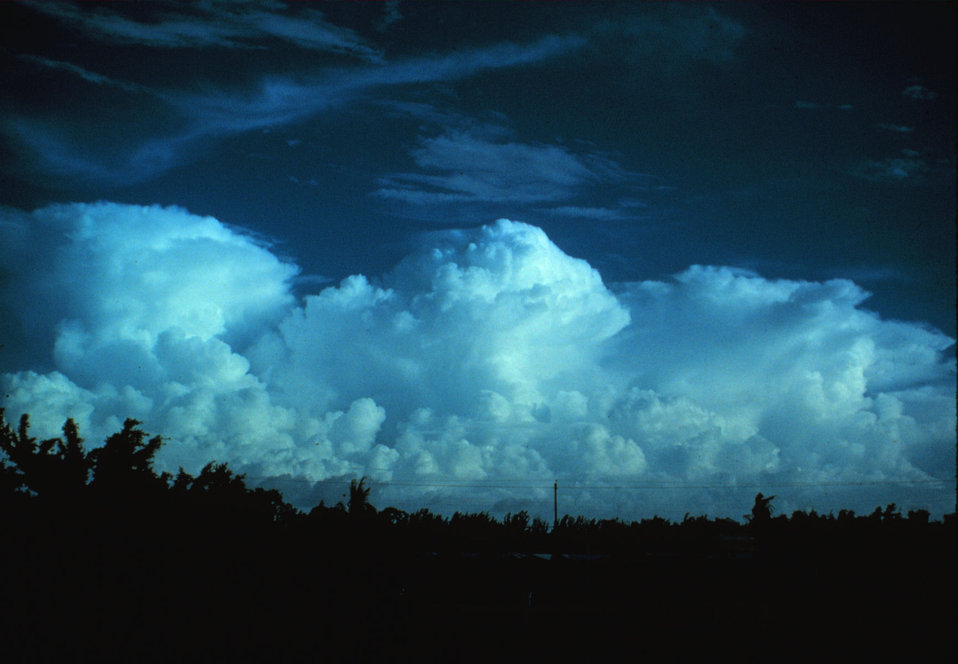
Cumulonimbus